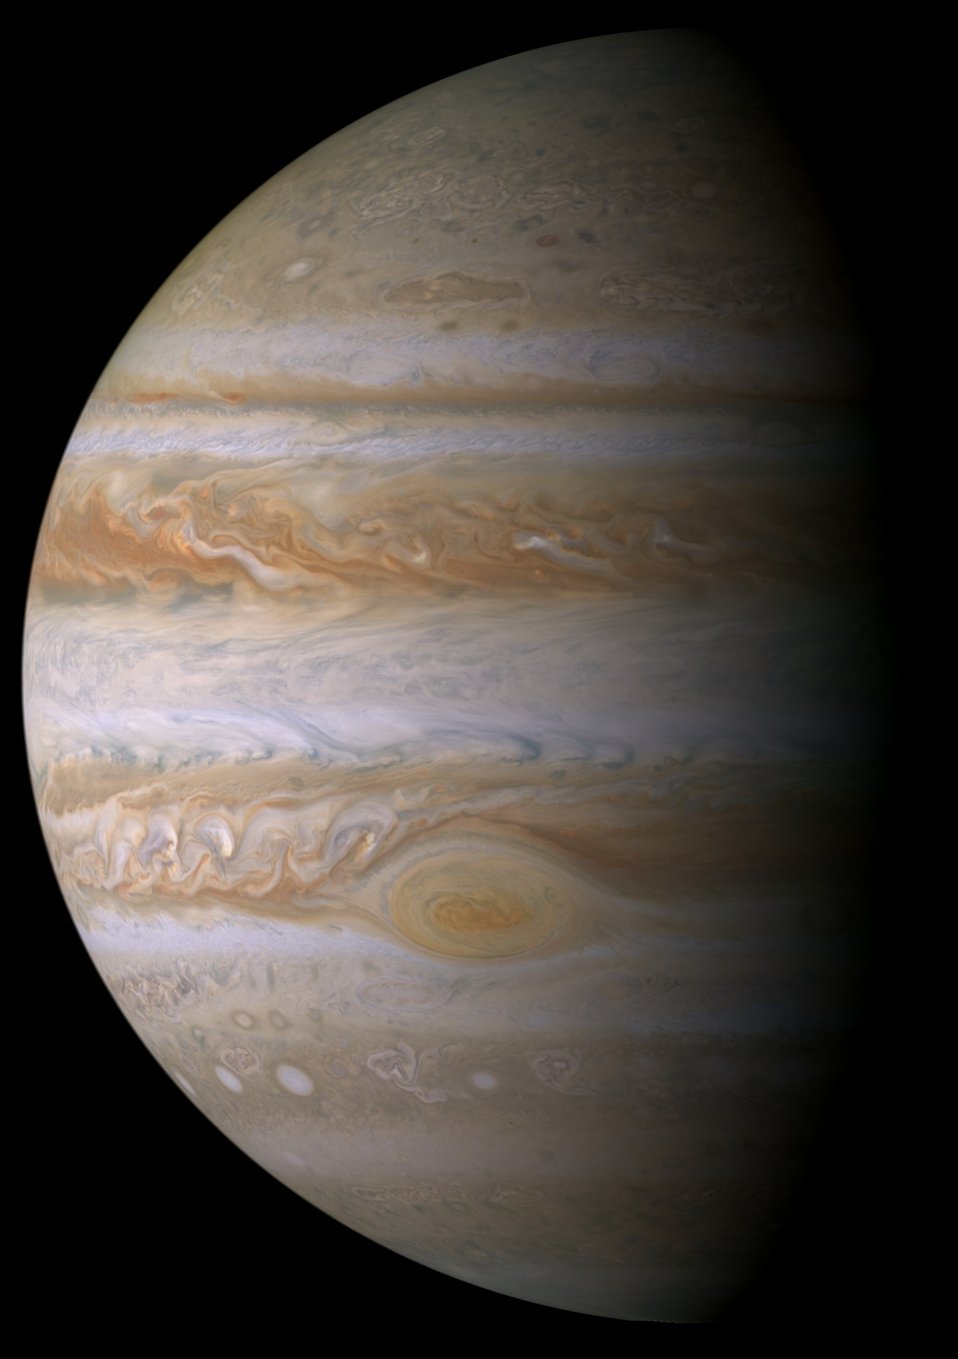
Planet

This is a public domain image created by nasa..